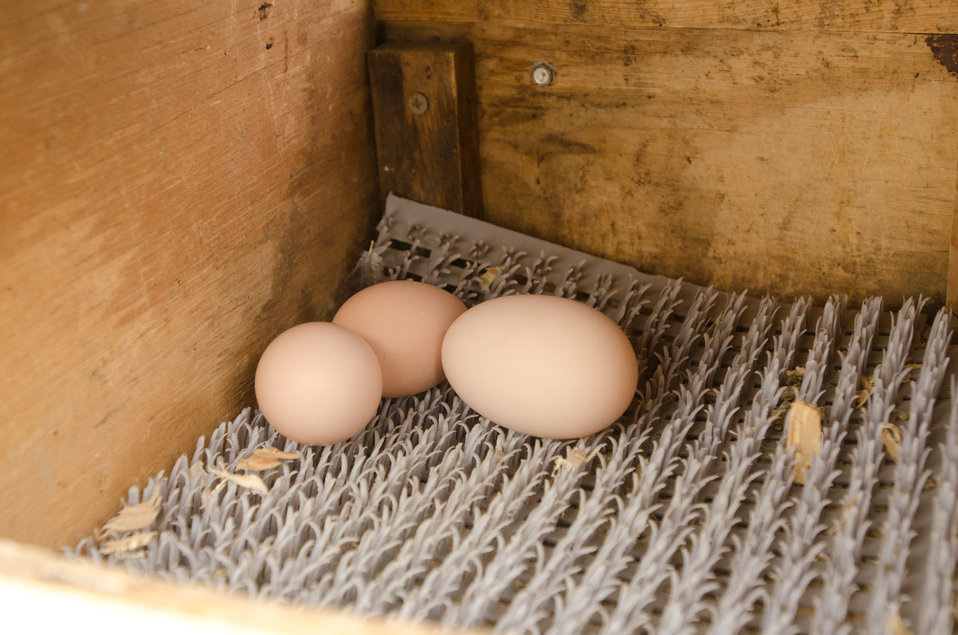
Large organic eggs, left and center, and a large double yoke egg, right, at Nick’s Organic Farm, in Adamstown, MD, on Friday, July 12, 2013. Mr. Kloph said, that younger chickens sometimes lay double yoke eggs and as they get older, the size becomes more consistant. Discarded horse trailers have been repurposed as coops with nests on the side that allow for easy egg harvesting. The farm, owned by Nick Maravell, produces Black Angus beef, chicken, turkey, eggs, hay, soybeans, corn, alfalfa, orchard grass, rye; and other crops. The cattle are100% grass-fed receiving certified organic pasture, certified organic hay (in winter), water and mineral salts mixed with sea kelp. The cattle are not fed hormones, antibiotics or animal products. Poultry feed from grain is ground from organic grain. The poultry also graze on organic pastures. The farm has conducted on-farm research with federal, state and non-profit agencies to refine organic practices. An organization such as the U.S. Department of Agriculture (USDA) Agricultural Research Service (ARS) center in Beltsville has been able to conduct research to improve organic crops and to breed and manage the cattle so that they have.